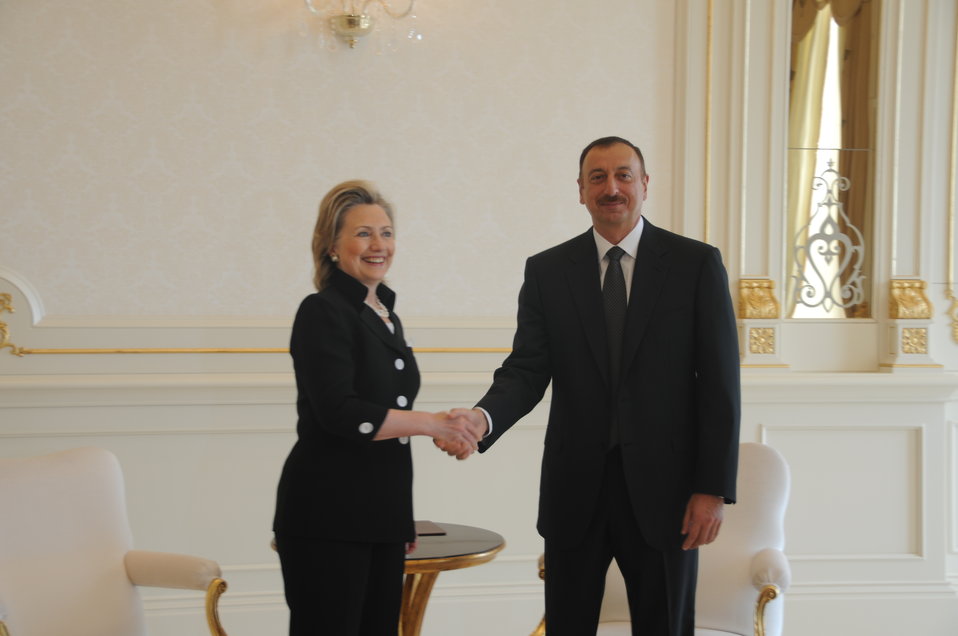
Secretary Clinton Is Greeted By Azerbaijani President Aliyev

U.S. Secretary of State Hillary Rodham Clinton is greeted by Azerbaijani President Ilham Aliyev at the Presidential Residence in Zagulba, Azerbaijan, on July 4, 2010.